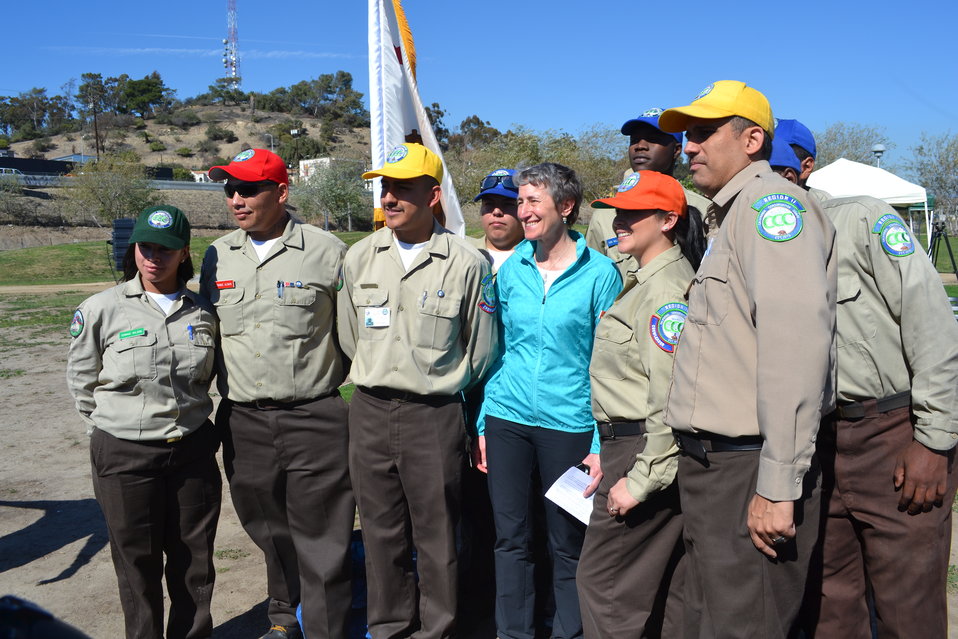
SOI Sally Jewell Visit to LA

Sally poses with the Los Angeles Conservation Corps, and California Conservation Corps in the background.